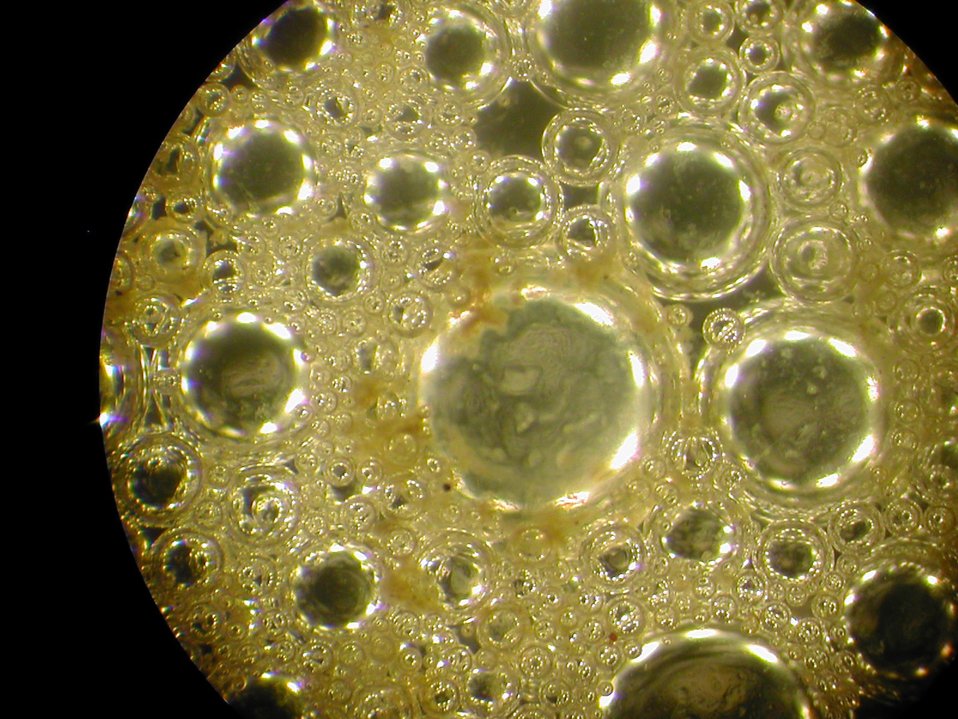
A SMALL BUBBLE OF CONTAMINATED SEAWATER TO BE STUDIED AT DOE'S MARINE SCIENCES LABORATORY.

PACIFIC NORTHWEST NATIONAL LABORATORY RESEARCHERS AT THE MARINE SCIENCE LABORATORY ANALYZE SEAWATER FOR CONTAMINATION. THIS SMALL BUBBLE CONTAINS PRE-CONCENTRATED MICROORGANISMS, OILS, FECAL COLIFORM BACTERIA, AND OTHER CONTAMINANTS COLLECTED FROM THE TOP 50 MICRONS ON THE SEA SURFACE MICROLAYER.